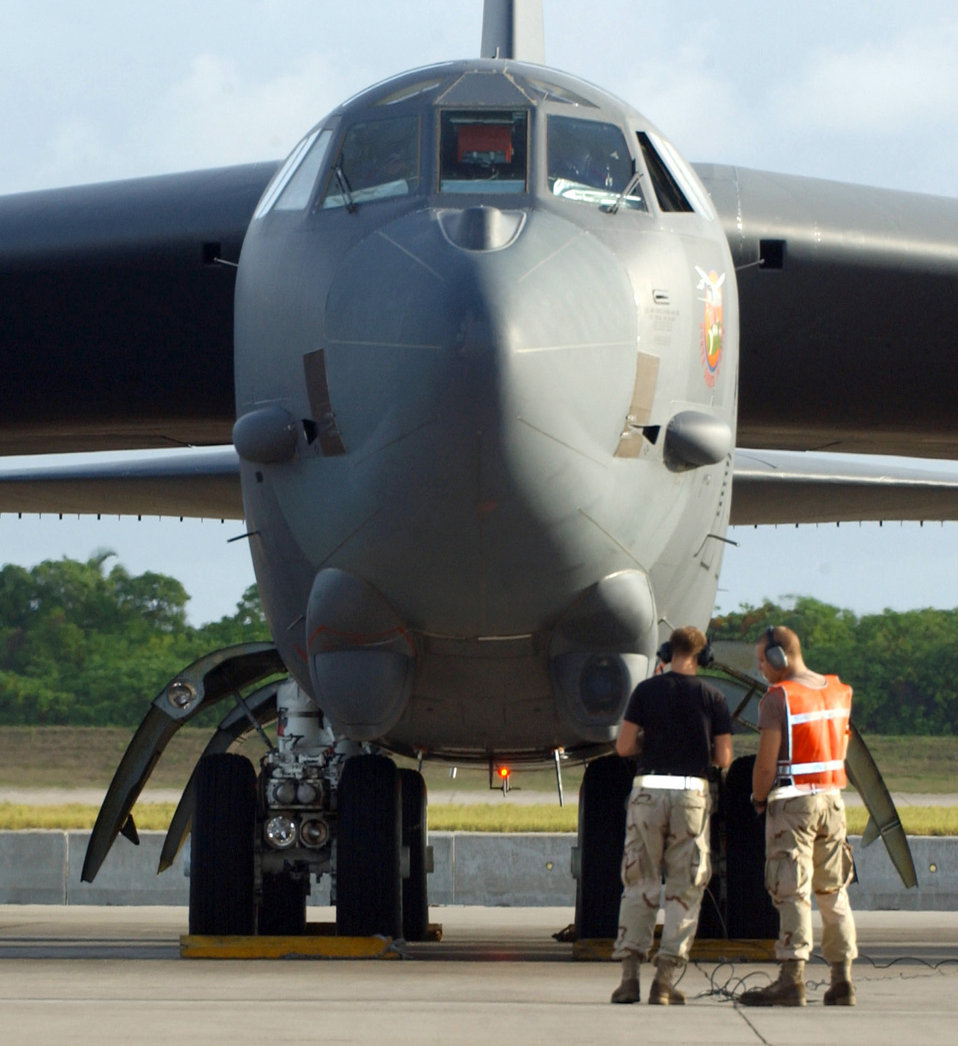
Crew chiefs turn bombers like fighters

OPERATION ENDURING FREEDOM -- Senior Airman Vincent Tripodi (left) and Airman 1st Class Nathan Jacobson prepare to launch a B-52 Stratofortress. They are crew chiefs with the 40th Expeditionary Maintenance Squadron at a forward-deployed location and are from Minot Air Force Base, N.D.